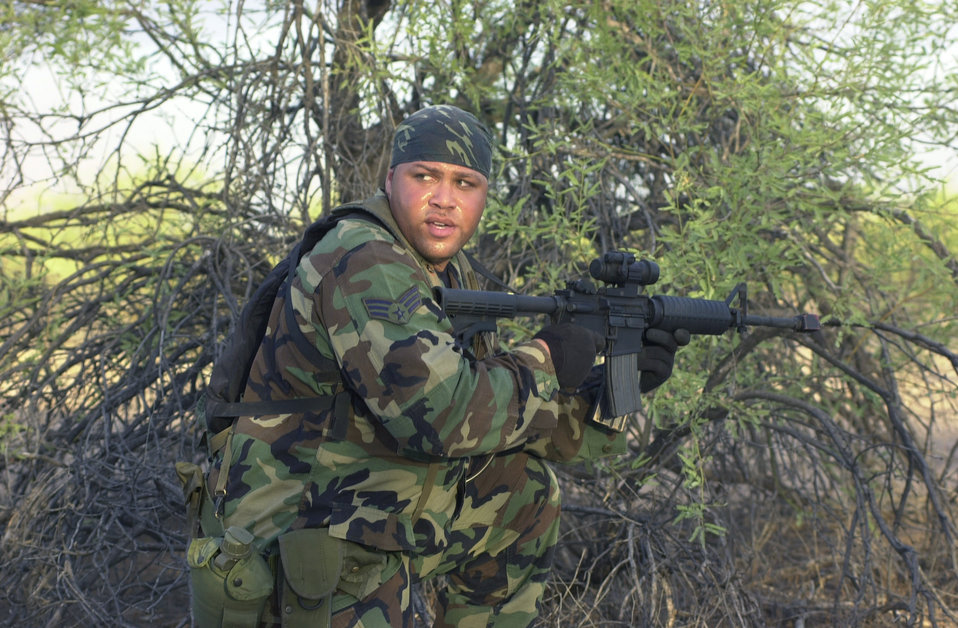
Surviving the game

LUKE AIR FORCE BASE, Ariz. -- Senior Airman Michael John hones his tactical skills during a simulated attack while conducting compass navigation training here recently. Airman John is assigned to the 56th Security Forces Squadron.